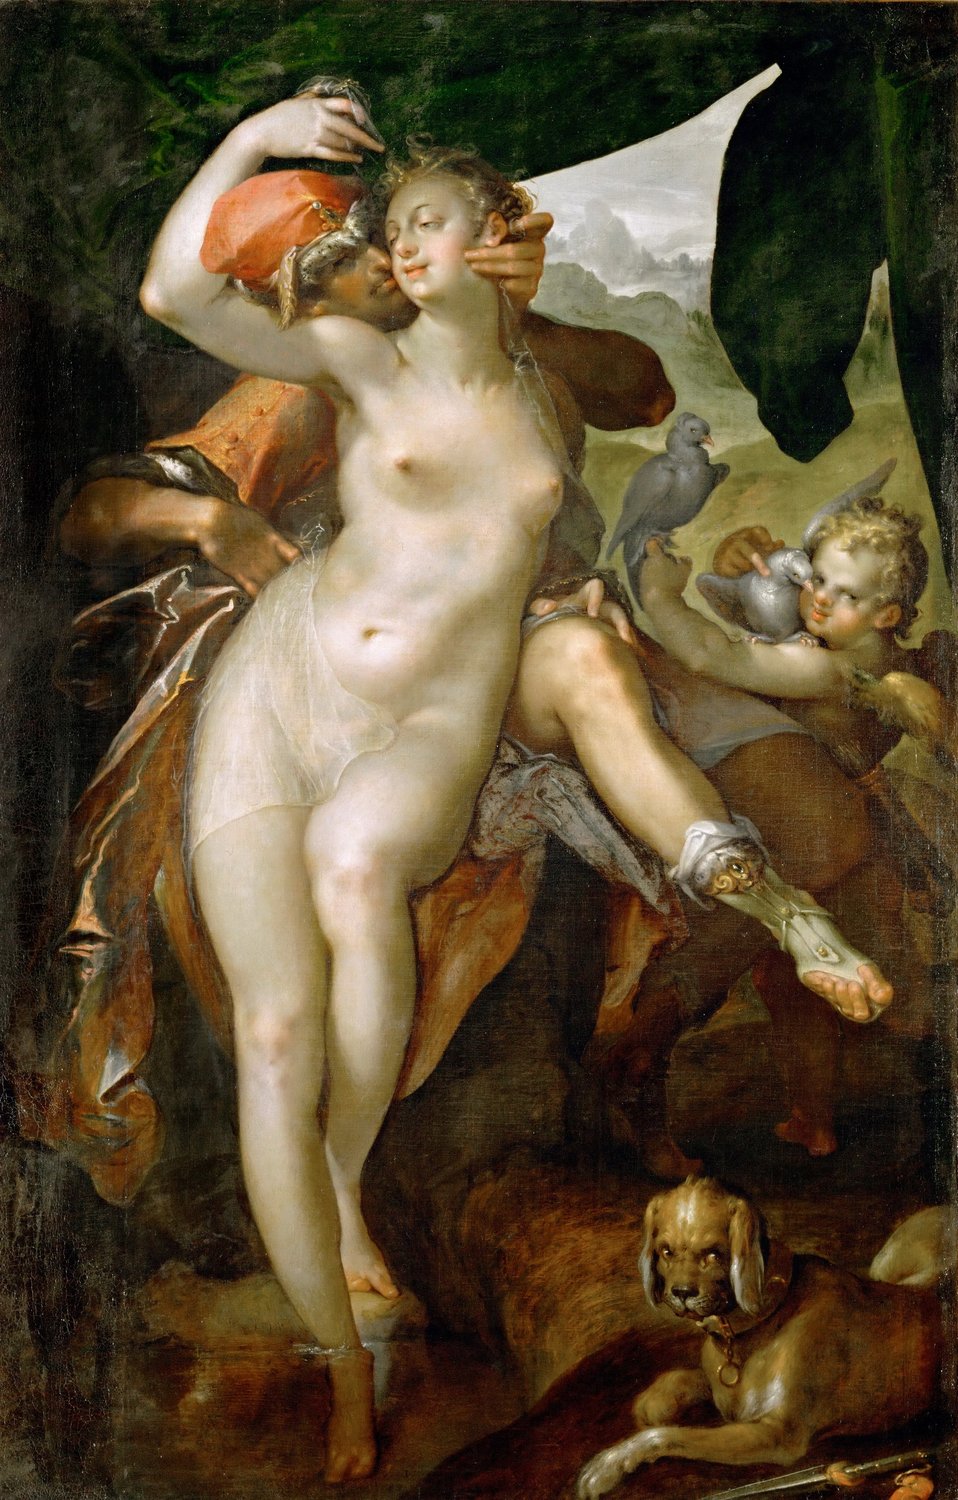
Bartholomäus Spranger 021